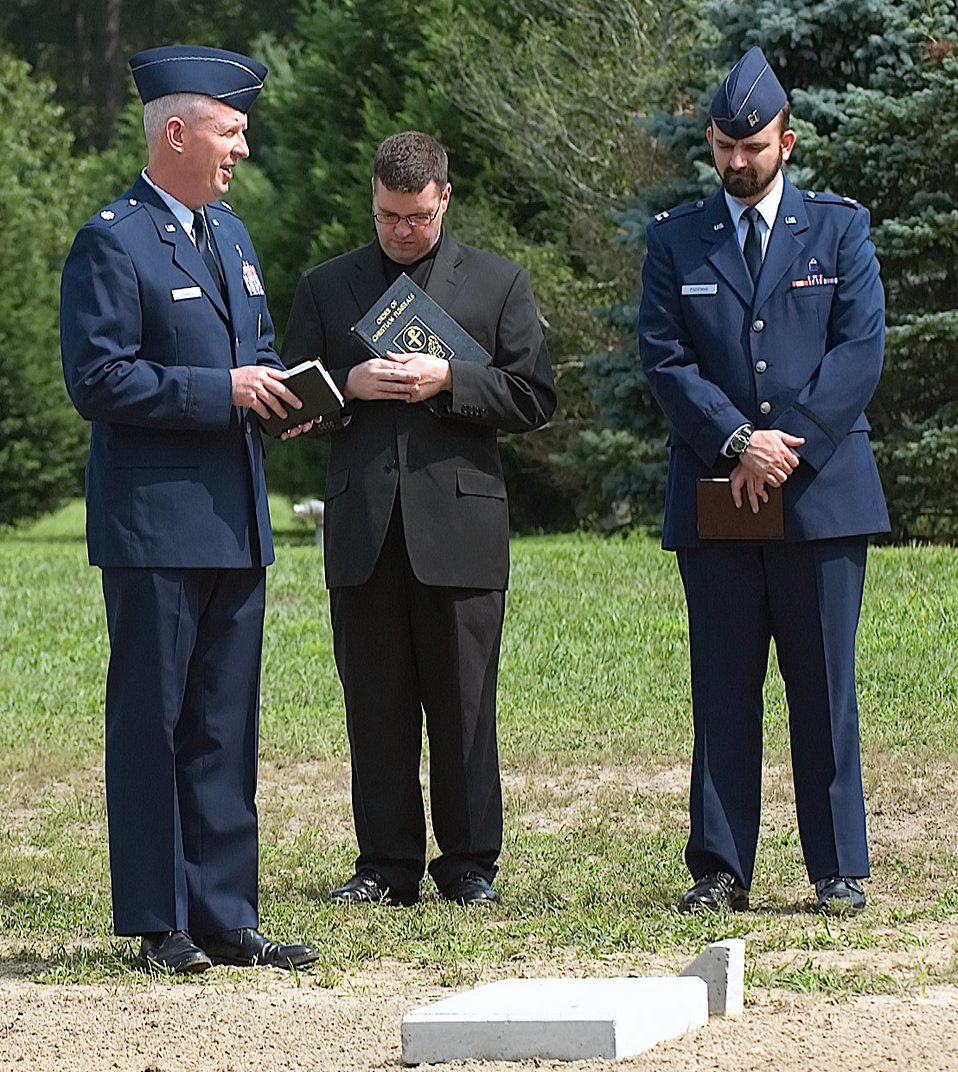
Ceremony honors 54 repatriated Americans

Chaplain (Lt. Col.) Ronald Harvell, Father Michael Darcy and Chaplain (Capt.) Robert Roffman provide Protestant, Jewish and Catholic prayers, respectively, at a ceremony to repatriate 54 deceased Americans Aug. 24 at the Delaware Veterans Memorial Cemetery. Chaplain Harvell is the 436th Airlift Wing chief chaplain, Chaplain Roffman is an individual mobilization augmentee assigned to the 436th AW, and Father Darcy is the assistant pastor of Saint Ann's Catholic Parish, Bethany Beach, Del.